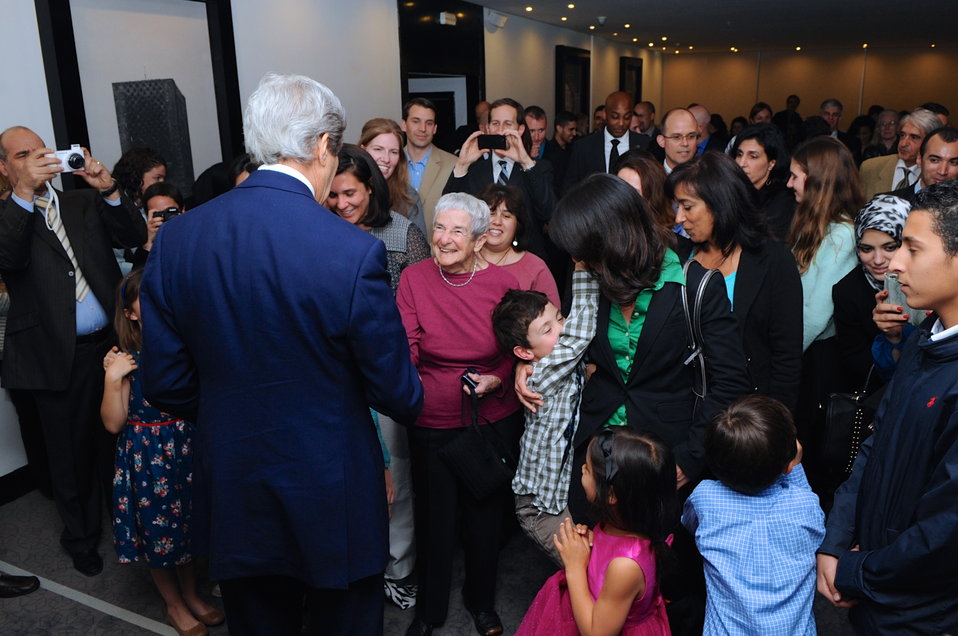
Secretary Kerry Greets Staff and Family at Embassy Rabat Event

U.S. Secretary of State John Kerry thanks the staff and family members from Embassy Rabat, Morocco on April 3, 2014, before a Strategic Dialogue between the United States and Morocco.